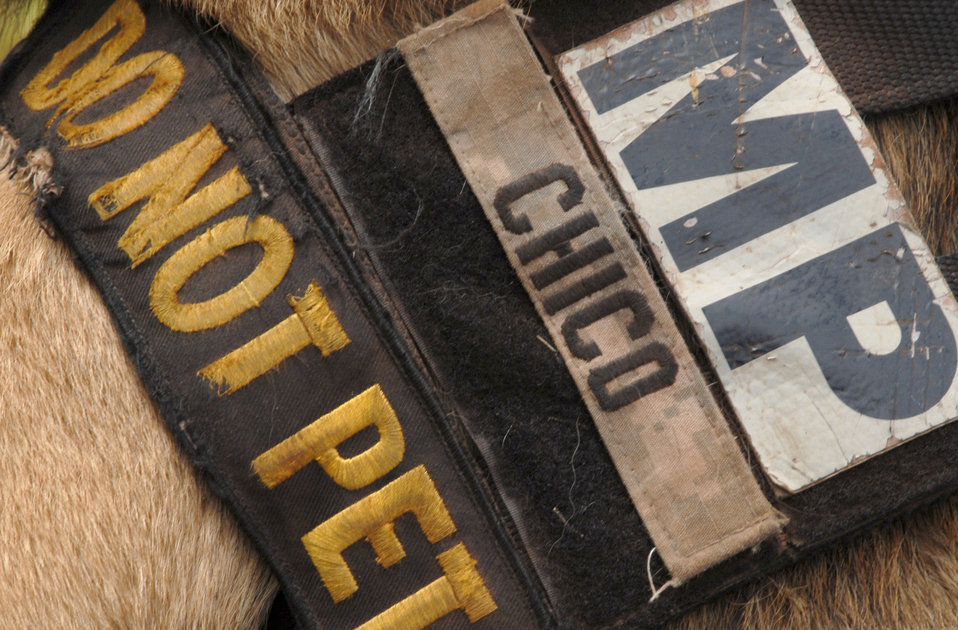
Working dog competition

Thirty-nine handlers from the Army, Navy, Marine Corps, and Air Force attended the 2010 Hawaiian Islands Working Dog Competition Nov. 15 to 19, 2010, at Schofield Barracks, Hawaii. The harness warning reminds people that Chico is not your average dog.